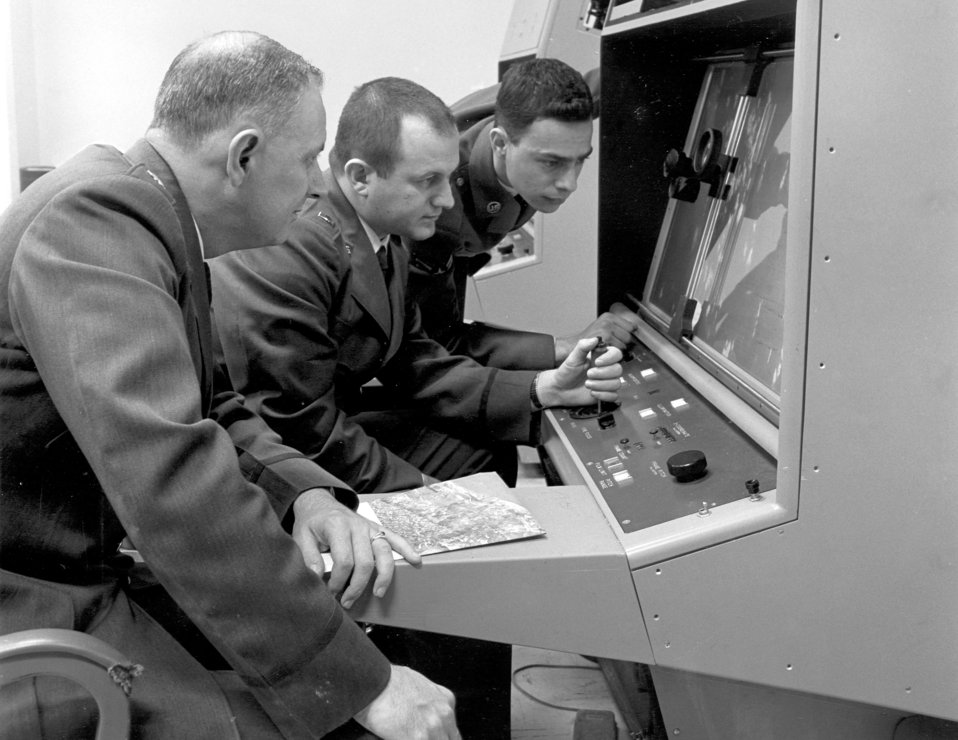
Cuban Missile Crisis

1960'S -- Strategic Air Command personnel interpreting reconnaissance photo during the Cuban Missile Crisis, 1962.